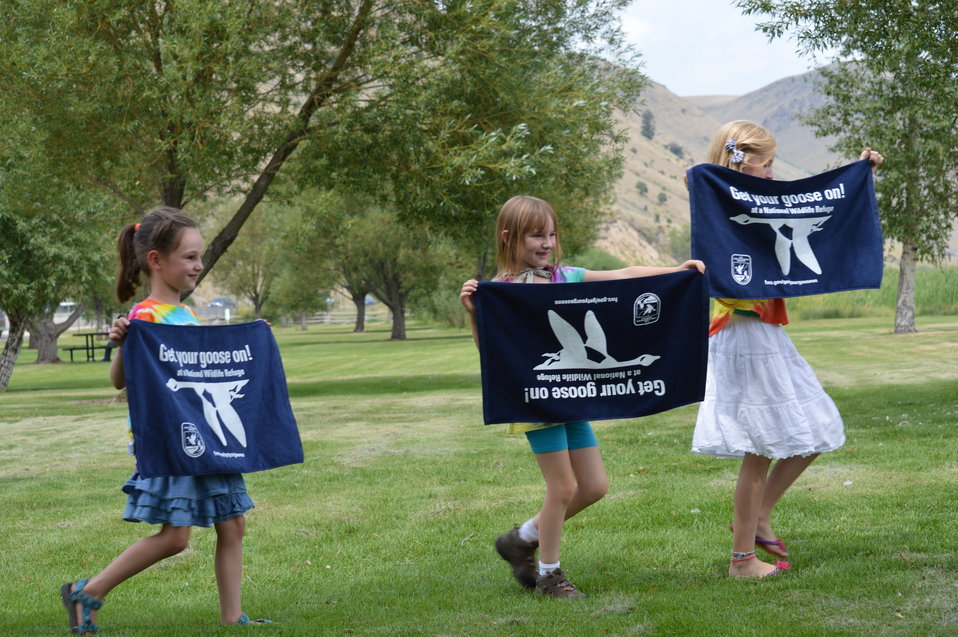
Get Your Goose On! - National Elk Refuge Style

On August 10, 2012 the U.S. Fish and Wildlife Service and Partners celebrated the 100 year anniversary of the establishment of the National Elk Refuge. In these photos, young attendees, along with Puddles the Blue Goose and the National Elk Refuge's mascot, showed us how to Get Your Goose On! with style.